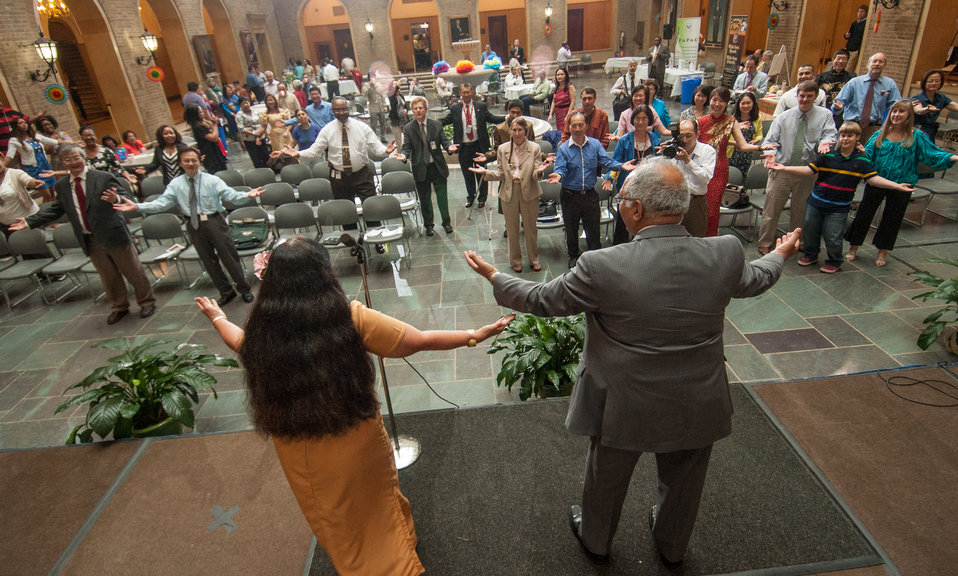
U.S. Department of Agriculture’s (USDA) Saleia Afele Faamuli (oranage color dress,) invites this audience to their feet to learn to hula dance, during the U.S. Department of Agriculture (USDA) Asian Pacific American Heritage Month Observance, at the USDA headquarters, Whitten Building patio, in Washington, D.C., on Thursday, May 23, 2013. The Hawaiian hula dance is one of the many valued cultural activities from the Pacific Islands, and represents part of This year’s theme: “Building leadership; Embracing the Cultural Values and Inclusions.”